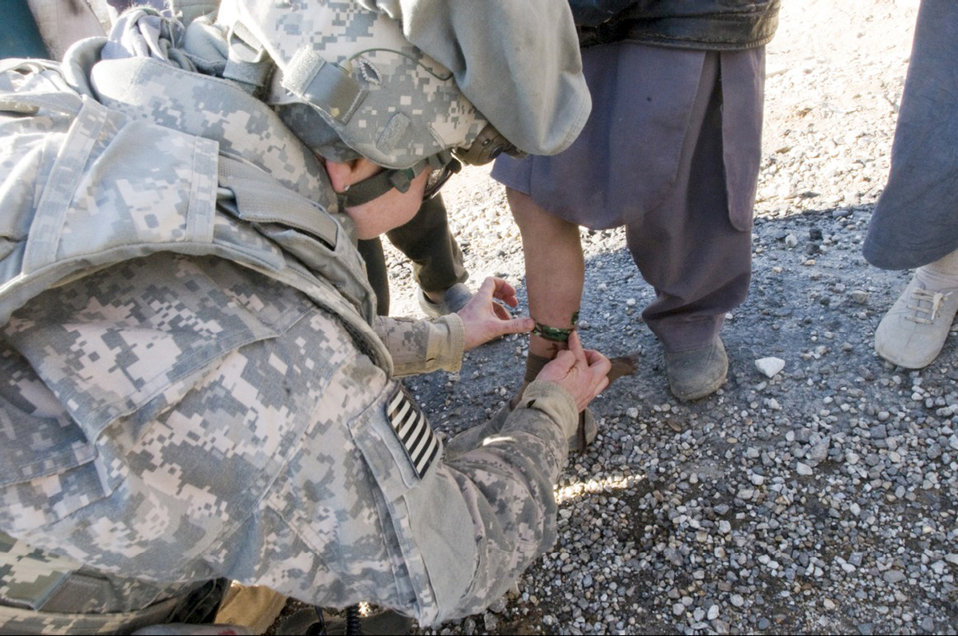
PRT Kapisa

Capt. Ann Voght applies a bandage to an Afghan boy during a patrol in Afghanistan. Captain Voght is a medical officer assigned to Provincial Reconstruction Team Kapisa.